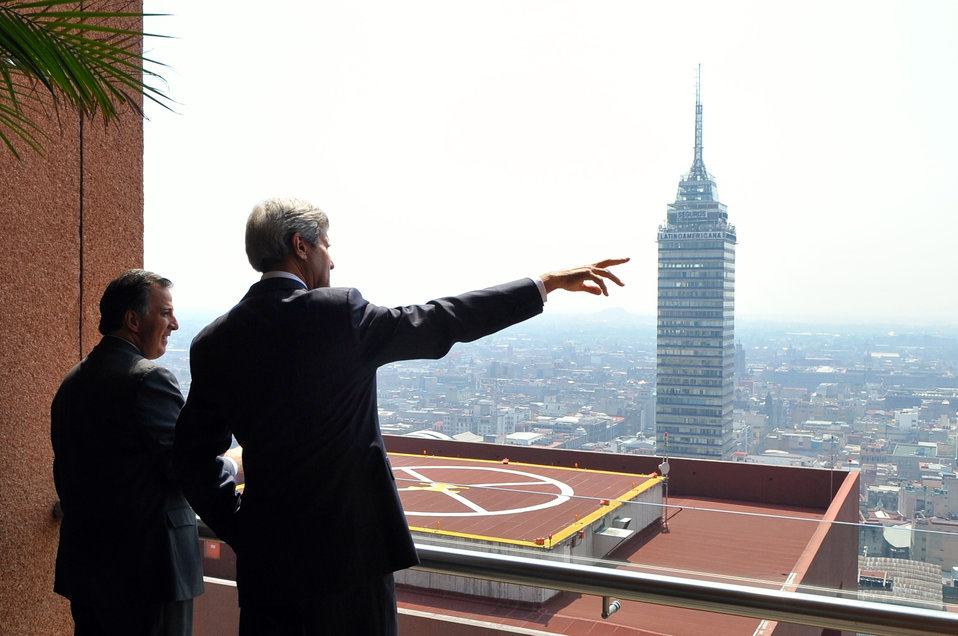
Secretary Kerry Admires Mexico City Landscape With Foreign Secretary Meade

U.S. Secretary of State John Kerry orients himself to the Mexico City landscape as he and Mexican Foreign Secretary José Antonio Meade admire the view from Meade's 22nd-floor office at the Secretariat of Foreign Affairs on May 21, 2014.